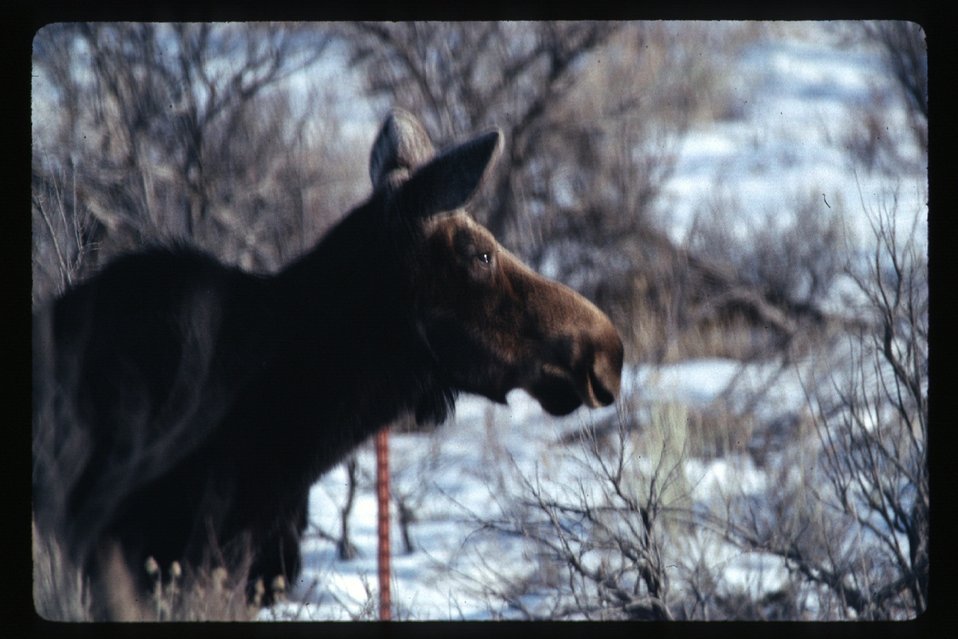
Moose Wildlife USRD Upper Snake River District